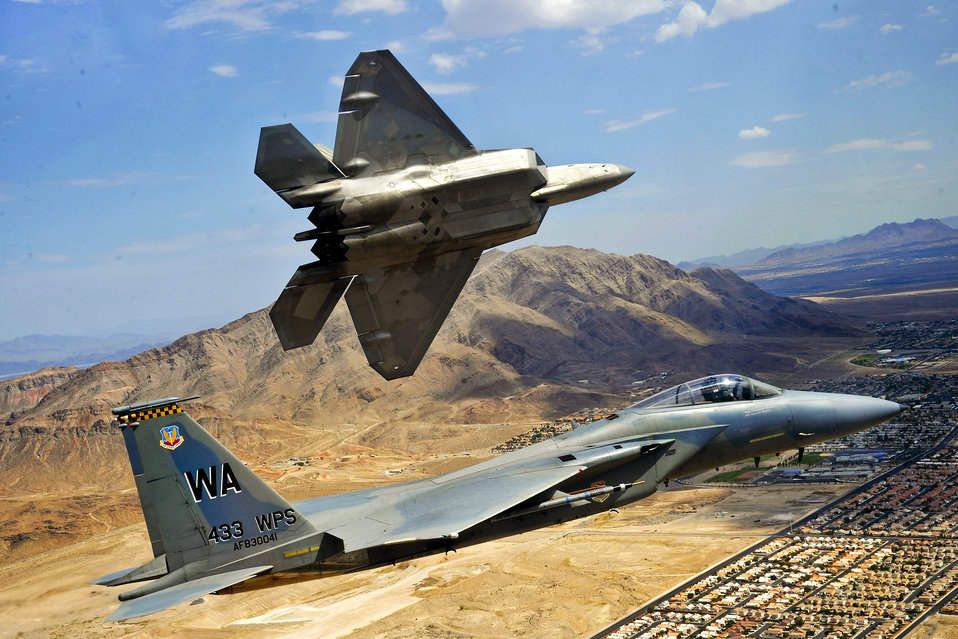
Time for landing

An F-22 Raptor pitches out for landing while an F-15 Eagle flies the approach July 16, 2010, at Nellis Air Force Base, Nev. The aircraft are from the U.S. Air Force Weapons School at Nellis AFB.